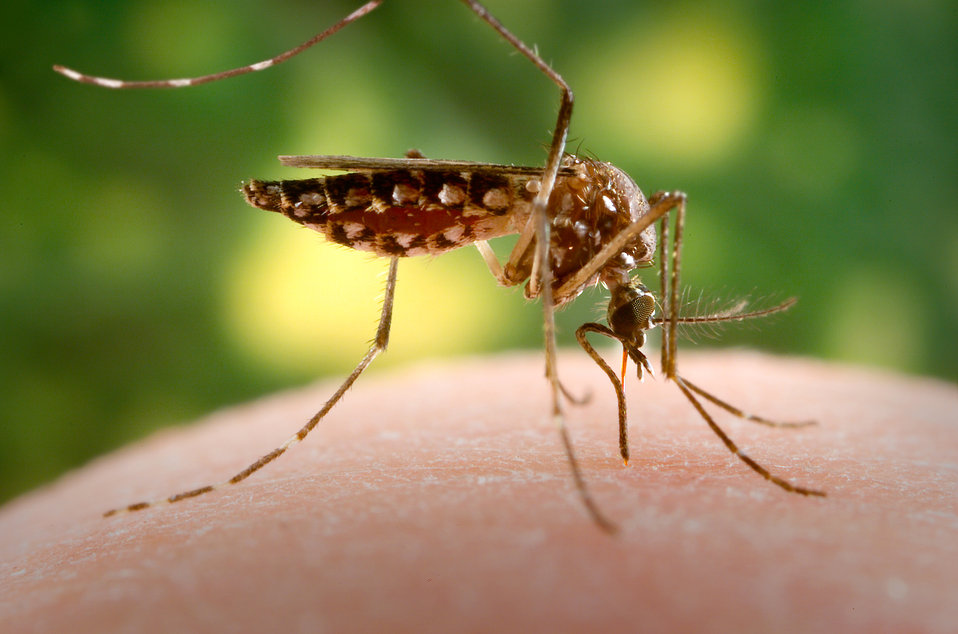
This 2006 photograph depicted a female Aedes aegypti mosquito as she was in the process of acquiring a blood meal from its human host, after having penetrated the skin surface with the sharply-pointed "fascicle". Normally, this female would be obtaining her blood from an unsuspecting host, but in this case, the CDC's biomedical photographer, James Gathany, had volunteered his own hand in order to entice the insect to alight, and feed. Note that her abdomen is beginning to fill with her blood meal, and will continue to fill, becoming distended as it appears in PHIL #8923, and how the proboscis' labial sheath was in its retracted, pulled back configuration, exposing the inserted, sharp fascicle, which had turned red, as the blood was passing up the straw-like needle-sharp apparatus.